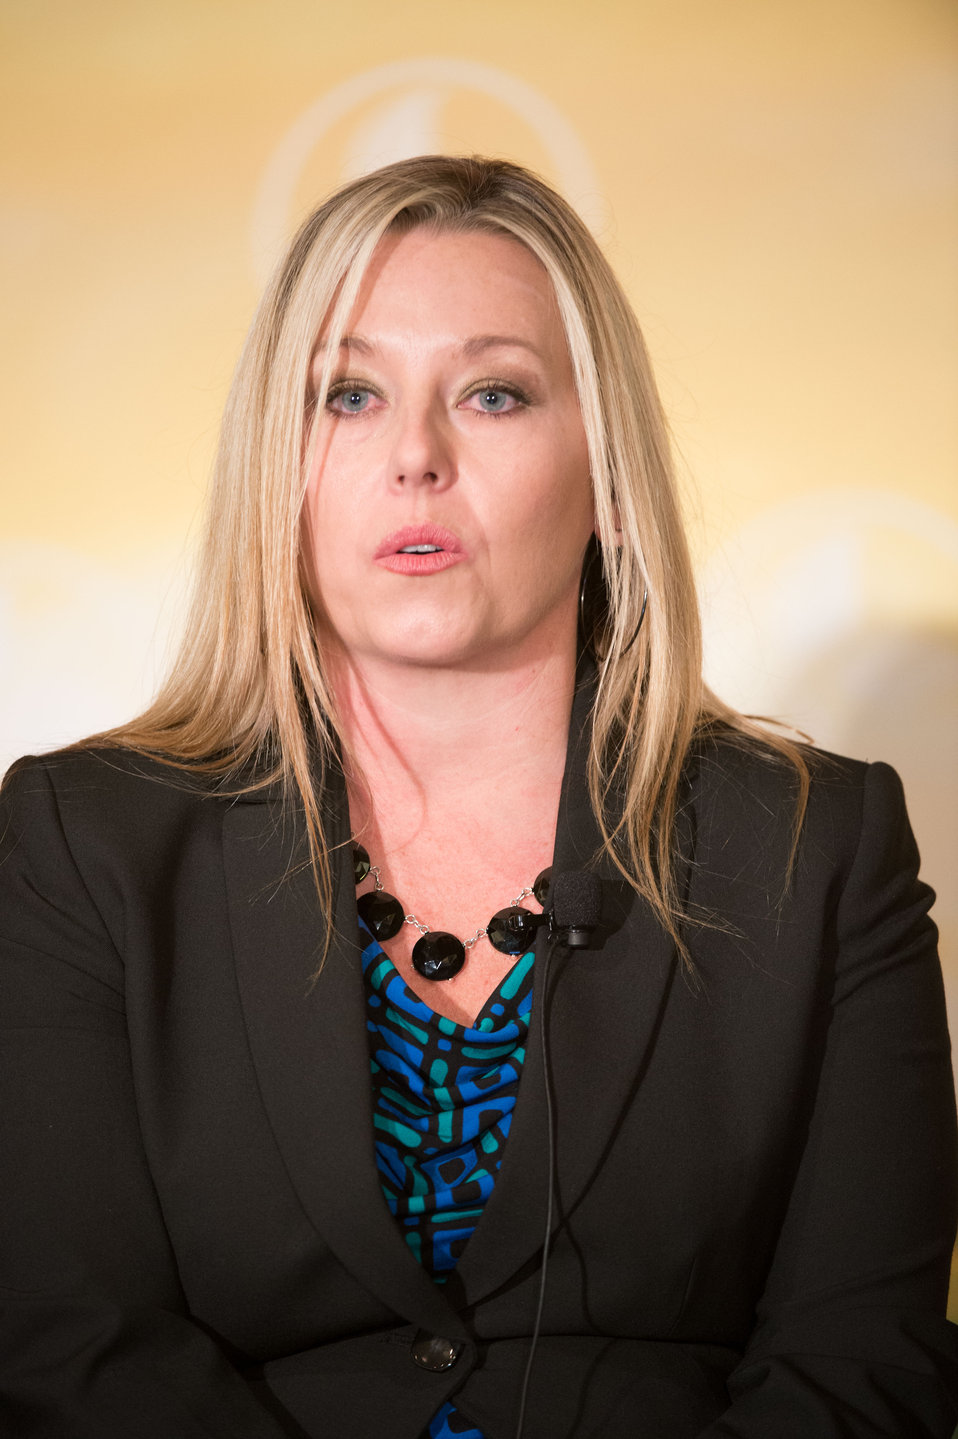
Young Farmers - Unlimited Opportunities panelist Top Producer Horizon awardee Joanna Carraway at the 2014 Agricultural Outlook Forum in Arlington, VA., on Thursday, Feb. 20, 2014. The U.S. Department of Agriculture's (USDA) annual Agricultural Outlook Forum brings together the agricultural community to discuss policy, trade, science, rural development, and the economic outlook for the coming year. The Forum also focuses on forestry, health and nutrition issues, and the changing dynamics and face of rural America.USDA photo by Bob Nichols.